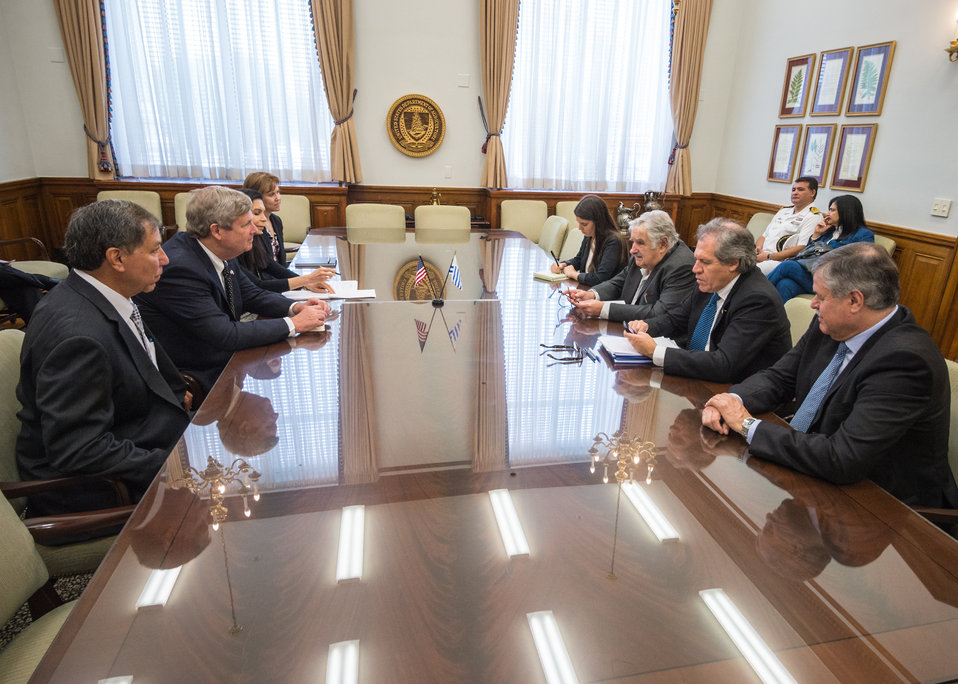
Agriculture Secretary Tom Vilsack and President Jose Mujica of Uruguay discuss cooperation in agricultural research, production and climate changes on agriculture at the U.S. Department of Agriculture (USDA) in Washington, D.C. on Wednesday, May 14, 2014. USDA Marketing and Regulatory Programs (MRP) Under Secretary Ed Avalos and USDA Farm and Foreign Agricultural Services (FFAS) Deputy Under Secretary Darci Vetter participated in the discussion.